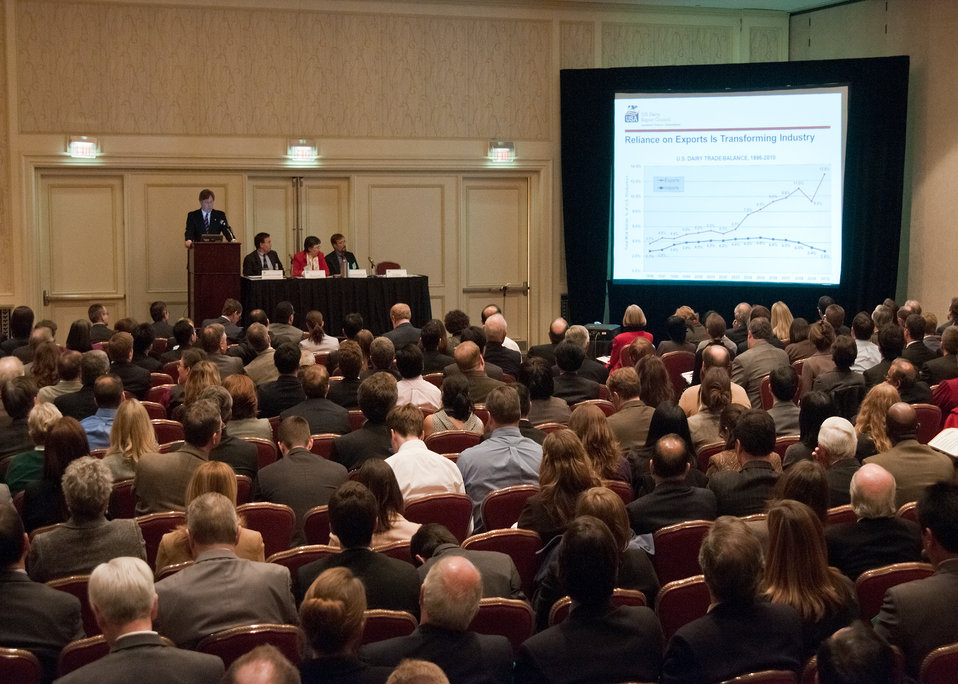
Onstage from left: Tom Suber, President, U.S. Dairy Export Council, Arlington, VA, Robert Riemenschneider, Deputy Administrator, Office of Global Analysis, Foreign Agricultural Services, USDA, Janet Nuzum, General Sales Manger, Associate Administrator, Foreign Agricultural Service, USDA and Gary Blumenthal, President and Chief Executive Officer, World Perspectives, Inc. Washington, DC; Suber discusses confronting technical barriers to trade at the, “Foreign Trade and the National Export Initiative” session at the World Agricultural Outlook Board Forum in Crystal City, VA, on Thursday, February 24, 2011. The theme of this year’s World Agricultural Outlook Board Forum is, “Today’s Strategies and Tomorrow’s Opportunities.” The forum is an opportunity for the U.S. Department of Agriculture to learn as well as to inform. Dialog and feedback are critical to understanding the issues that are important to agriculture.